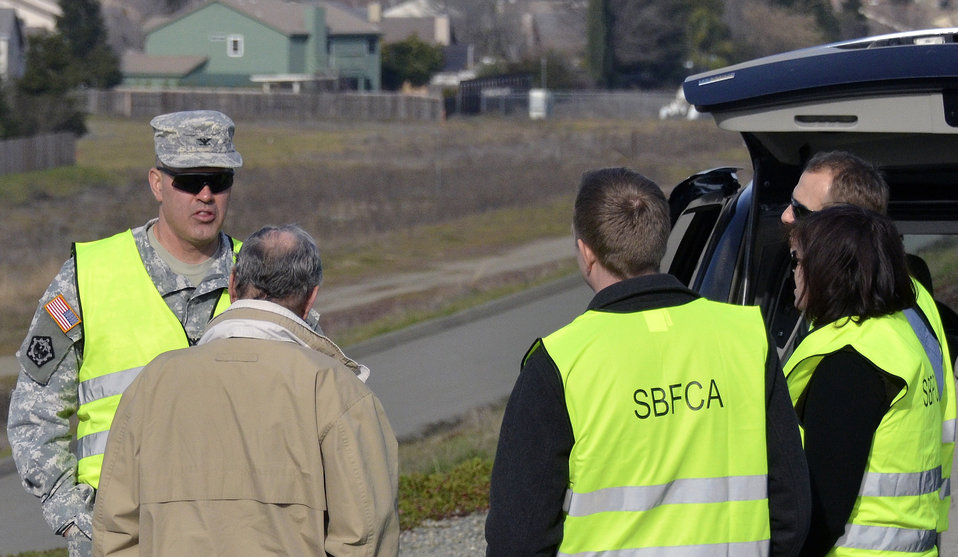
SBFCA project

Col. Bill Leady, commander of the U.S. Army Corps of Engineers Sacramento District, speaks with members of his Corps team and representatives from the Sutter Butte Flood Control Agency and Sutter County Levee District One in Yuba City, Calif., Jan. 22, 2013. Leady and the representatives toured the site of the proposed Feather River West Levee Project in Yuba City during the visit. This SBFCA project aims to provide 200-year flood protection for Biggs, Gridley, Live Oak and Yuba City plus 100-year flood protection for the rural area of the river basin south of the four townships.